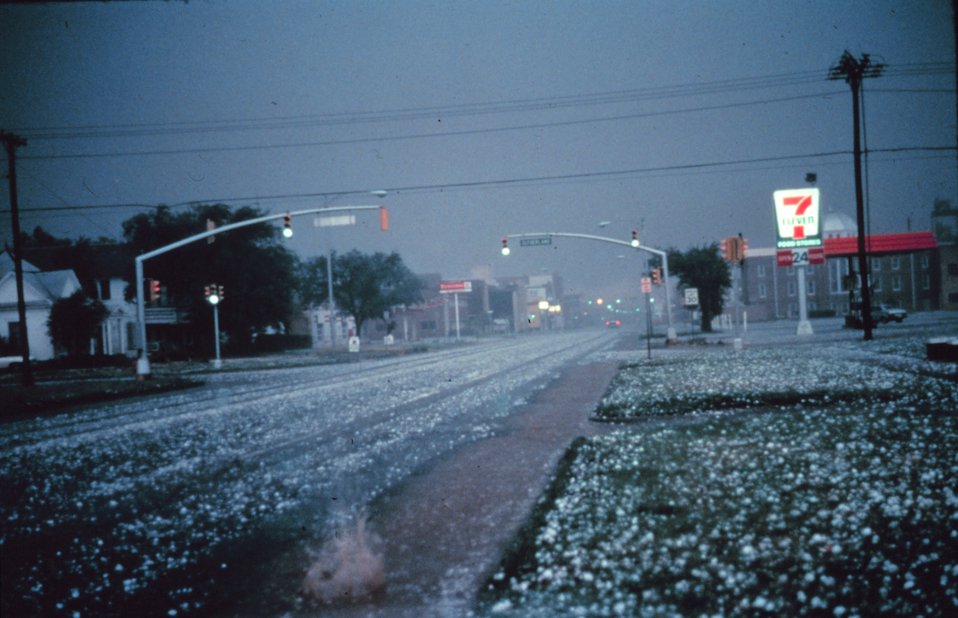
Large hail collects on streets and grass during severe thunderstorm. Larger stones appear to be nearly 2 to 3 inches in diameter.